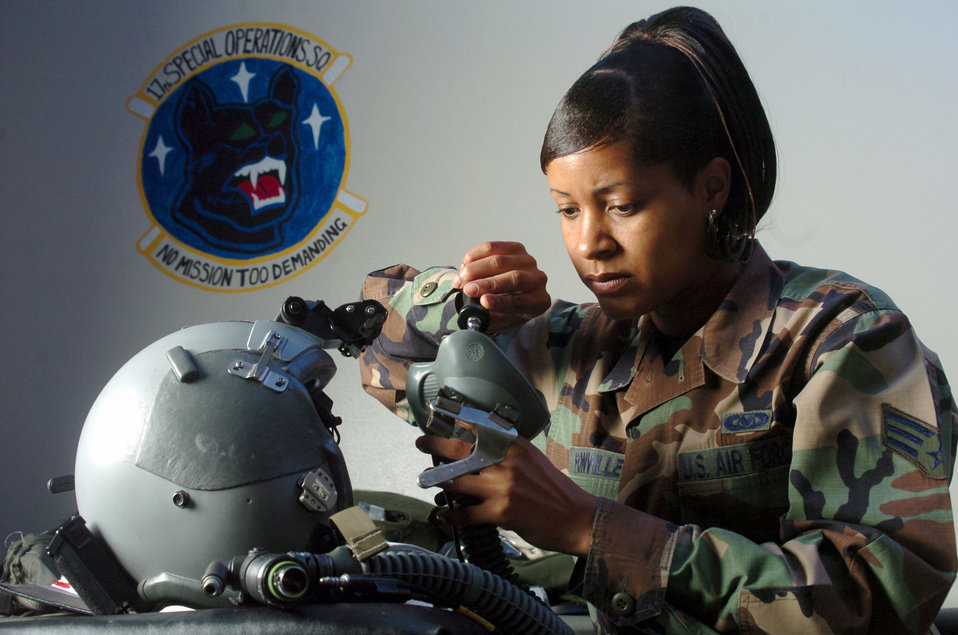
Life-support Airmen offer keys to survival

KADENA AIR BASE, Japan -- Senior Airman Patrina Fonville inspects a helmet here. She is a life-support technician with the 17th Special Operations Squadron.